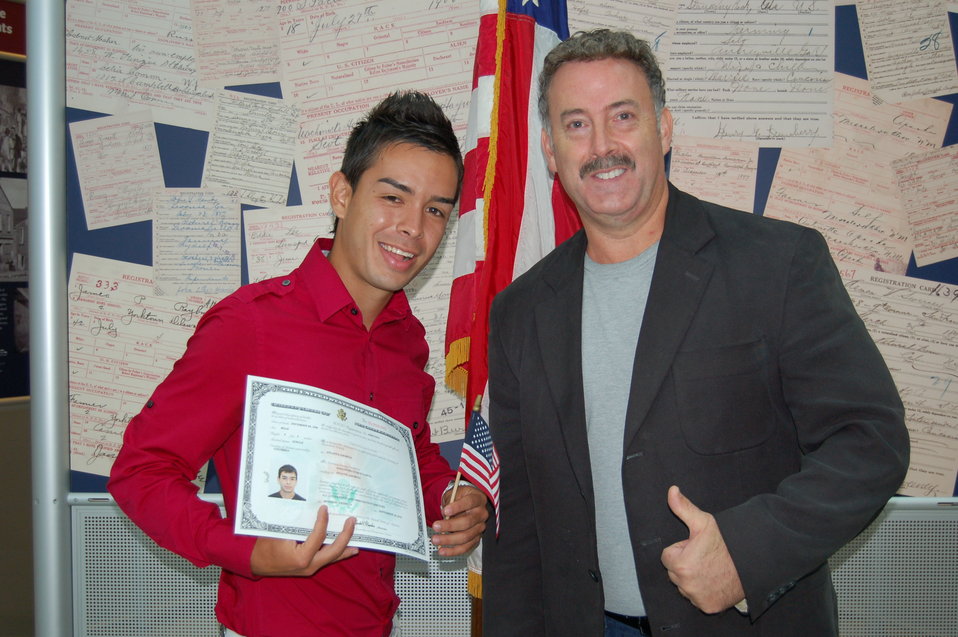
New Citizens